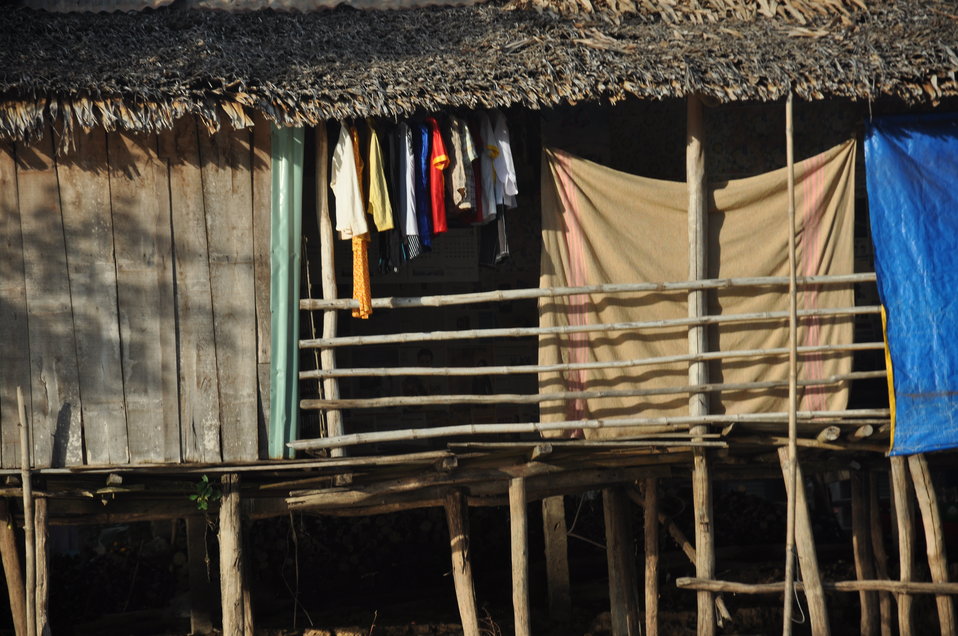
USAID supplies assistance to flood-stricken Long An Province, Tan Thanh District

USAID site visit to Long An Province to visit flood relief beneficiaries